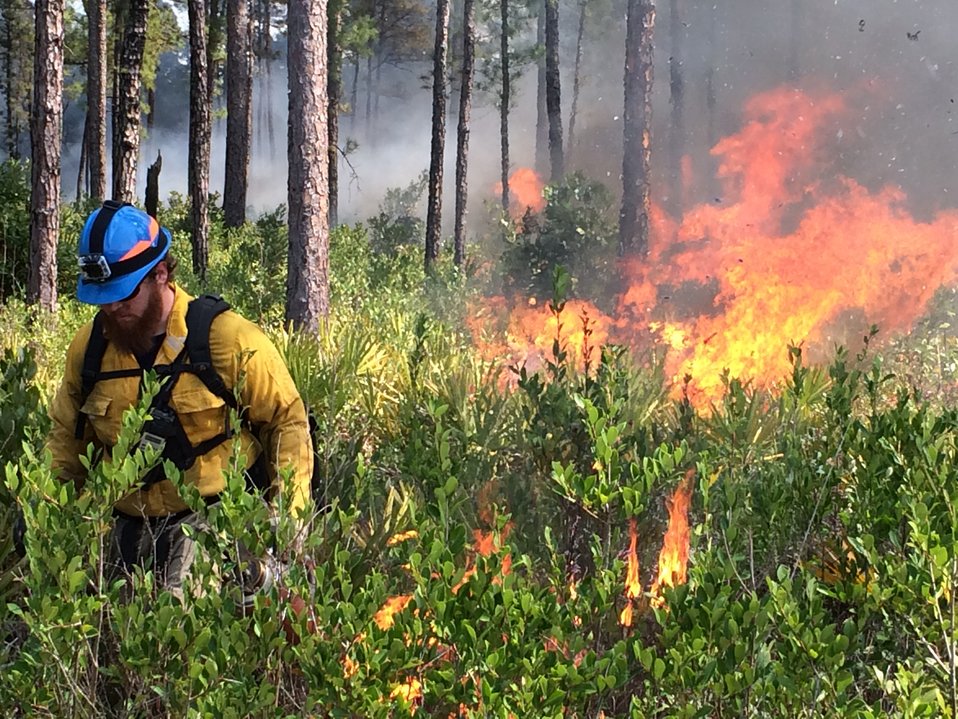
Heisey-Oke Rx-031114

Forestry Tech Andy Heisey assists with hand ignition of a burn unit near the refuge boat house and visitor center.